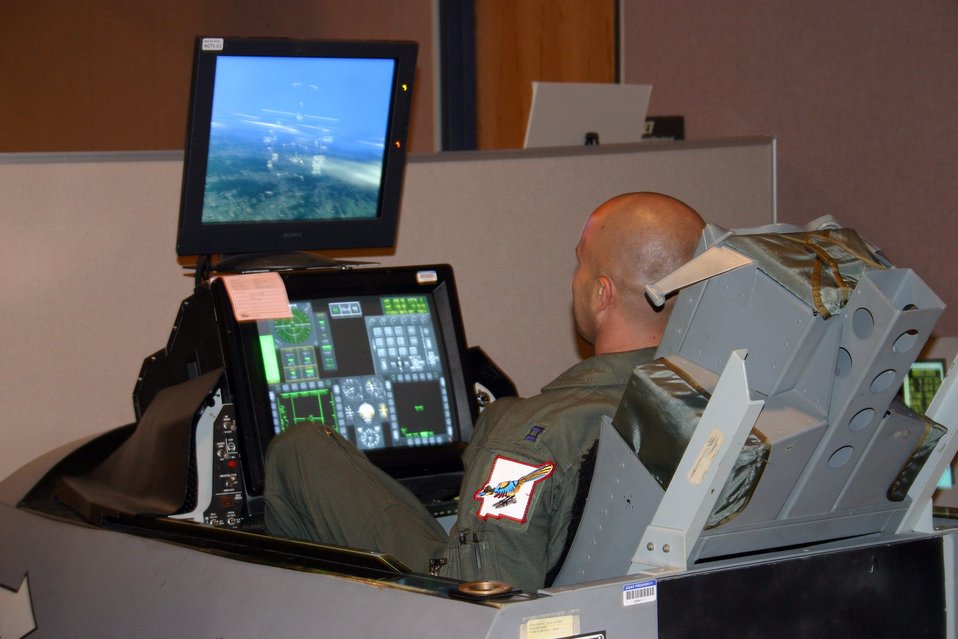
Virtual Flag 06

KIRTLAND AIR FORCE BASE, N.M. (AFPN) - Capt. Ryan McGuire flies a MIG-29 mission on a simulator at the Distributed Mission Operations Center here during Virtual Flag 06. The